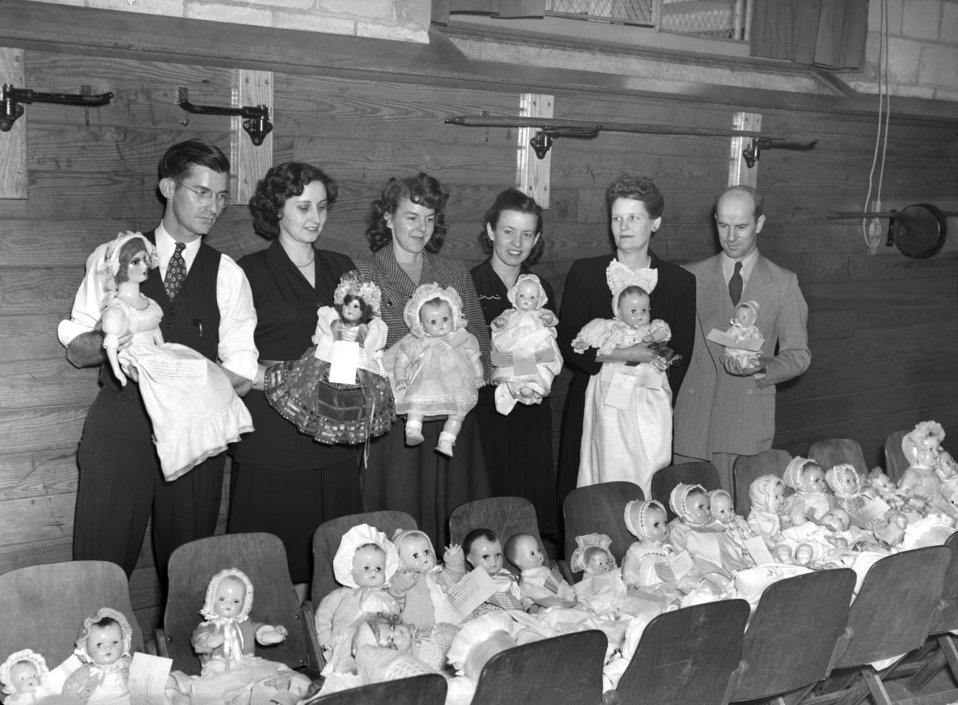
Doll Show Glennwood School Oak Ridge 1947

3275-8cpa DOE photo Ed Westcott Oak Ridge Tennessee